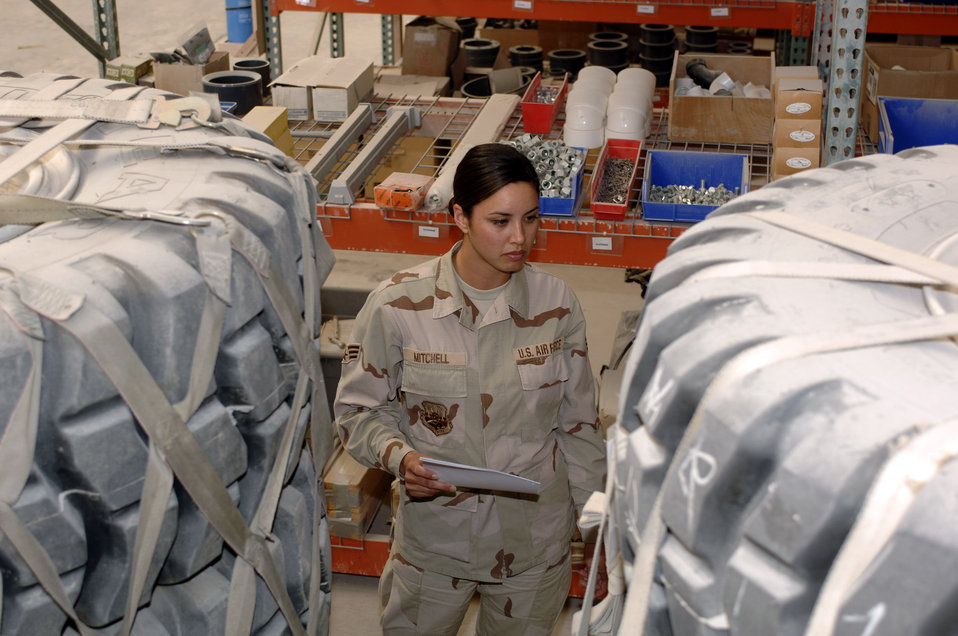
RED HORSE logistics hub supports Airmen uprange

Senior Airman Marcella Mitchell checks inventory and takes accountability of items to be shipped to forward-deployed RED HORSE units throughout the area of responsibility Feb. 20 in Southwest Asia. Airman Mitchell is a 1st Expeditionary RED HORSE Group material controller.